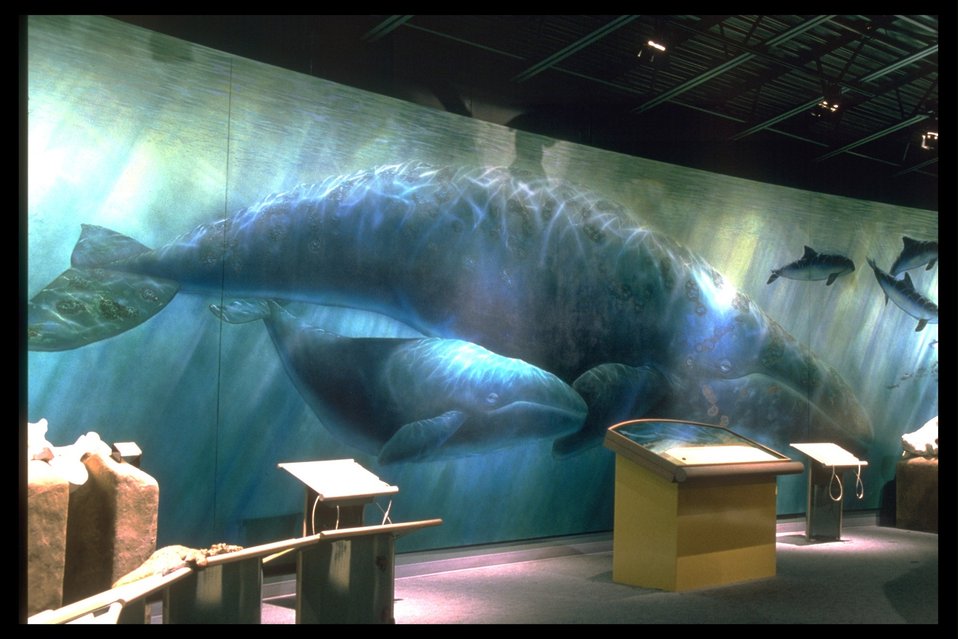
Gray Whale painting in the Interpretive Center exhibit hall.